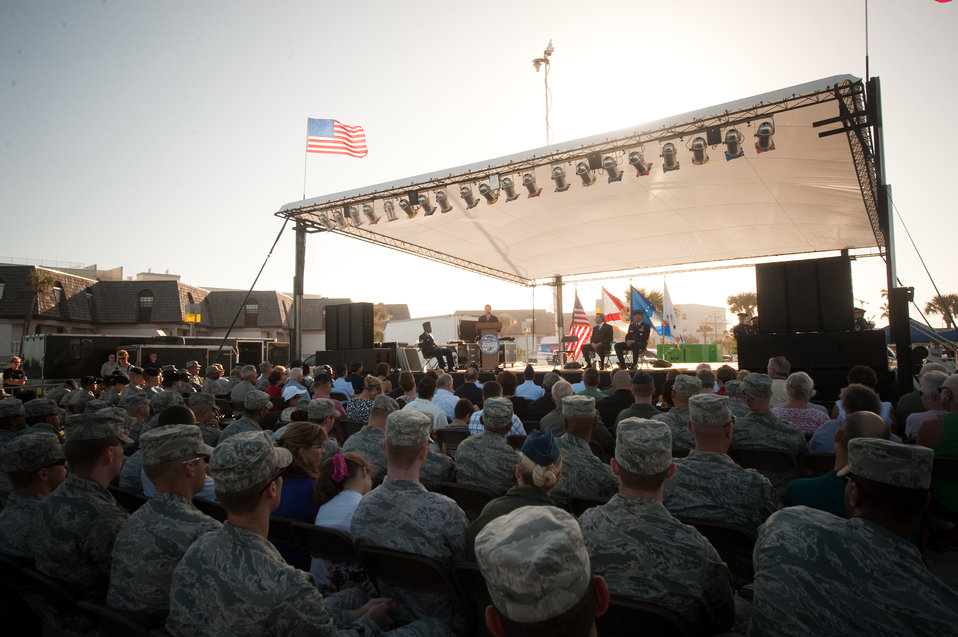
Air Force Week Cocoa Beach Launch

Undersecretary of the Air Force Erin C. Conaton addresses the audience in Cocoa Beach, Fla., Oct. 26, 2010, during the Proclamation Ceremony that formally launches Air Force Week Cocoa Beach. Air Force Week continues through Oct. 31.